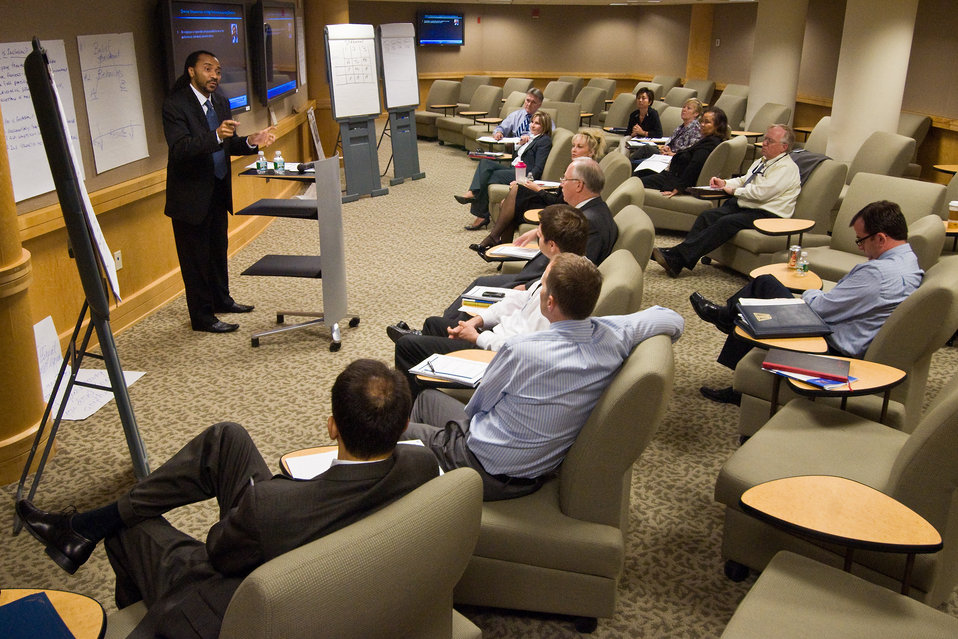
Darrell Butler, of Innovations International facilitating a meeting of Department of Agriculture employees during a session of the Secretary's Transformational Training in Washington, DC, Wednesday, August 25, 2010. The Transformational Training is for Department of Agriculture executives, managers and employees to help improve the civil rights of clients and employees. USDA Photo 10di1473-20 by Bob Nichols.